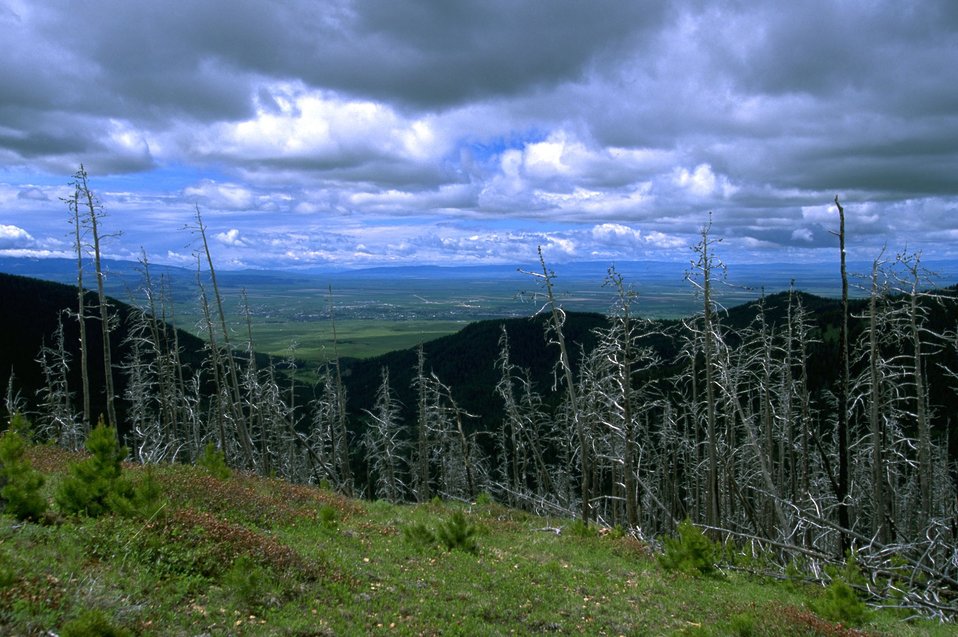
Dead trees above Lewistown MT in the Judith Mountains